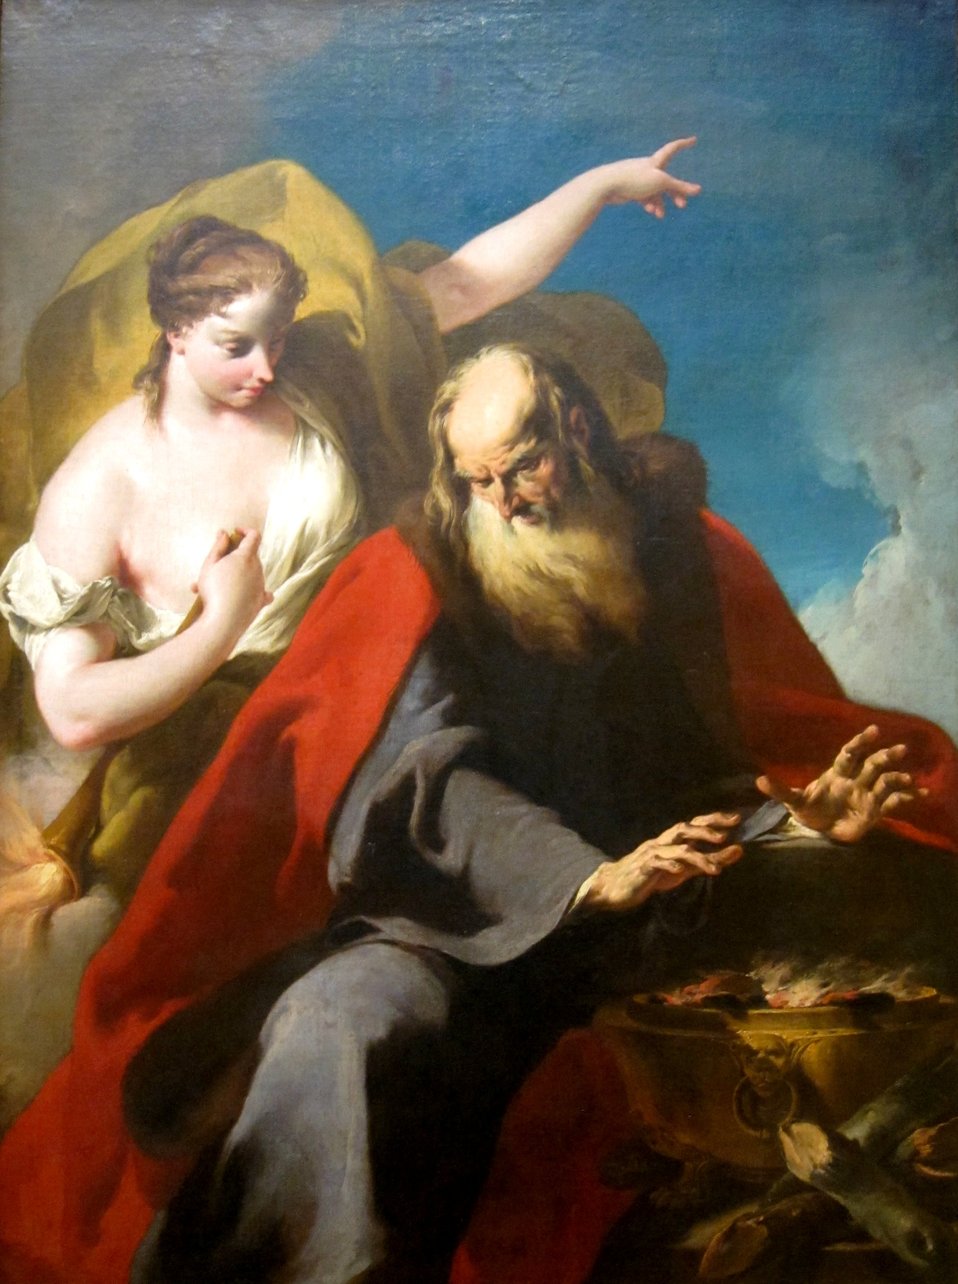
'Allegory of Summer and Winter' by Giovanni Battista Pittoni, Dayton Art Institute